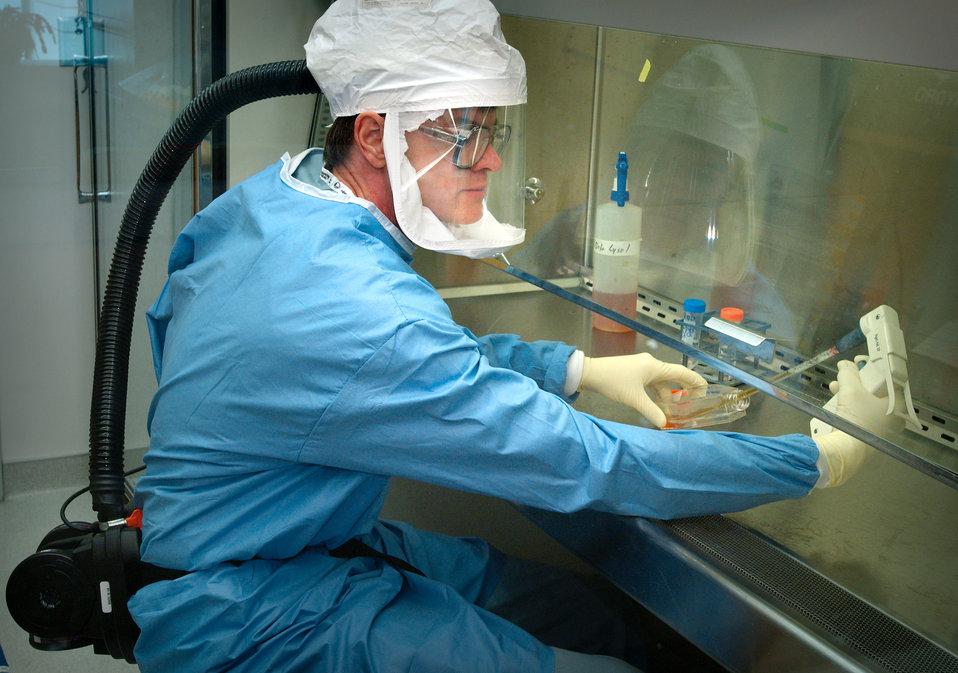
This 2005 photograph depicts one of the Centers for Disease Control's (CDC) staff microbiologists using an electronic pipetter to extract reconstructed 1918 Pandemic Influenza Virus from a calibrated vial containing a supernatant culture medium. The image was captured in a Biosafety Level 3-enhanced laboratory setting, where this scientist was working beneath a flow hood, whereupon, air outside the hood is pulled into the hood's confines and is then filtered of any pathogens before being re-circulated inside the self-contained laboratory atmosphere.